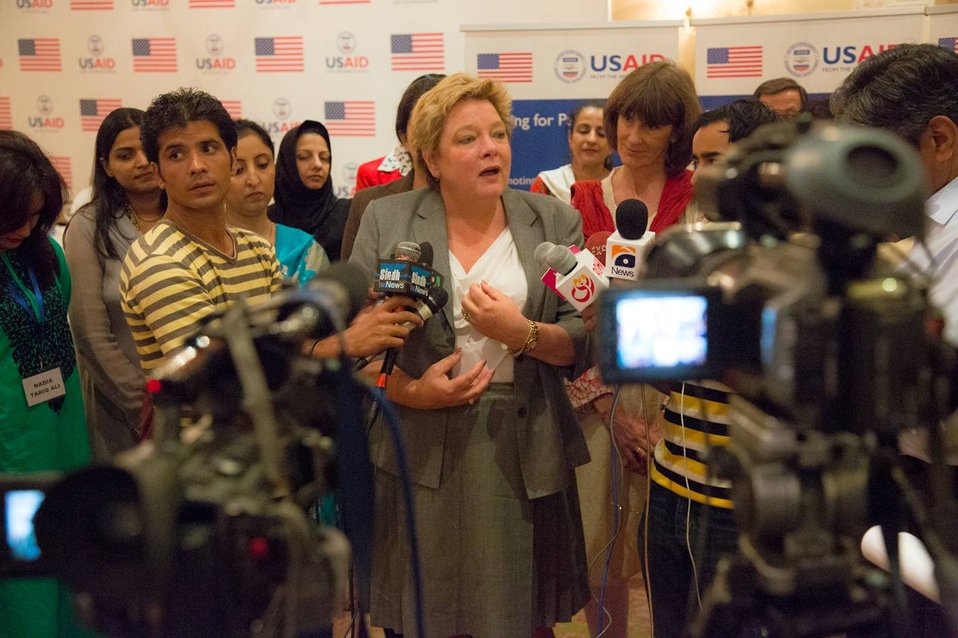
US-funded Study Tour Offers New Ideas for Addressing Gender-Based Violence

Islamabad, September 6, 2012 - USAID Deputy Mission Director Karen Freeman talks to media representatives.